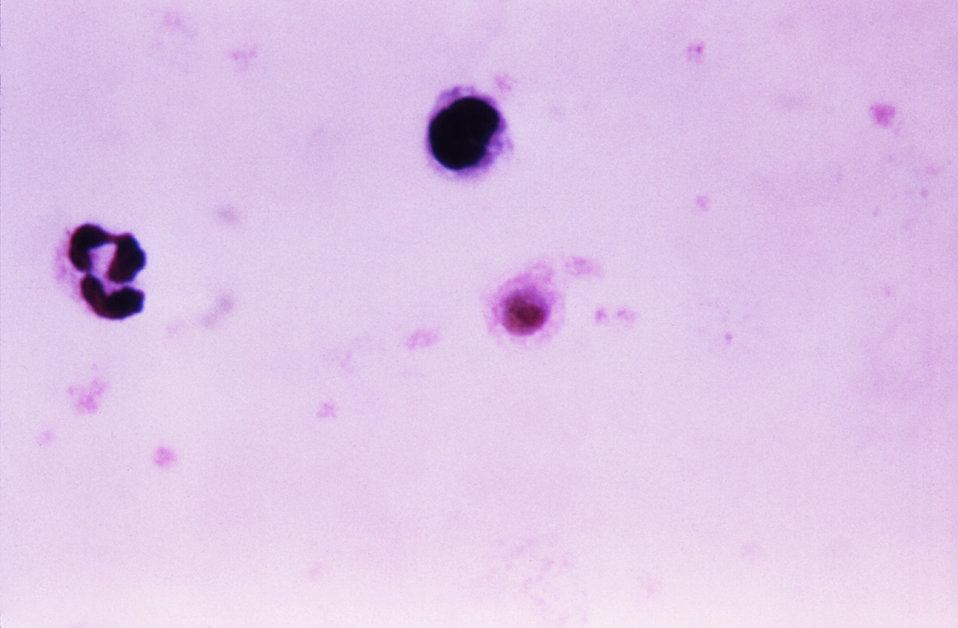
This thick film Giemsa stained micrograph revealed a Plasmodium vivax gametocyte.